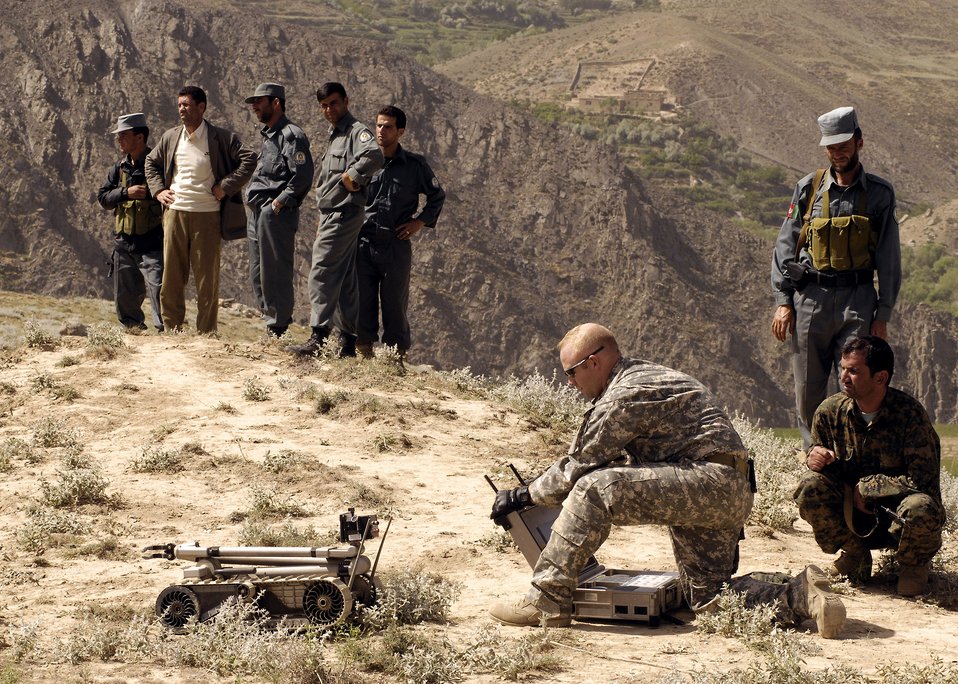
Robot wrecks rockets

Staff Sgt. Jason Snow sends a Pacbot to an incident site in Panjshir Province, Afghanistan while local authorities watch. Two 107 mm rockets on timer were found aimed at a coalition forward operating base and then destroyed.